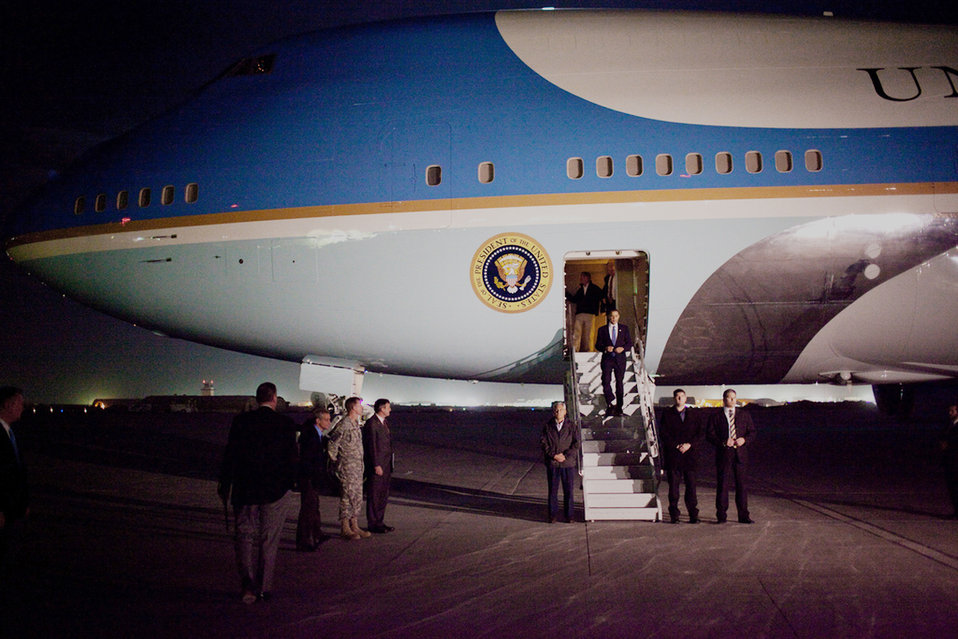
President Obama pays surprise visit to troops in Afghanistan

President Barack Obama arrives at Bagram Airfield in Afghanistan March 28, 2010. He was met by U.S. Ambassdor Karl Eikenberry and Army Gen. Stanley McChrystal.